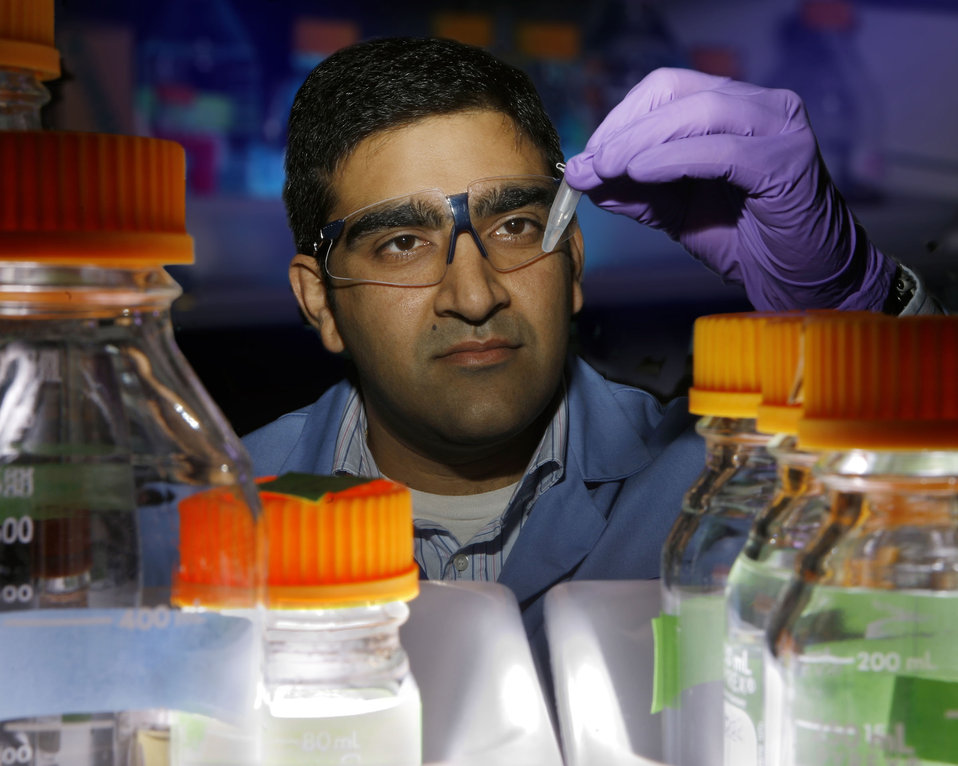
At Sandia, Rajat Sapra examines assays for the screening of engineered enzymes that show increased activity and stability at acidic conditions.

Enzymes are capable of breaking down plant material and converting it to liquid fuel efficiently. Researchers are studying ways to make biofuels from plant materials called lignocellulosic ethanol. If the enzymes can be enlisted to do much of the chemical deconstruction work, they might unlock a new transportation economy based on ethanol derived from candidate plants other than corn. Lignocellulose, one of the most abundant renewable organic materials on Earth, is a mix of complex sugars and lignin that gives strength and structure to plant cell walls. The produce fuel ethanol, lignocellulose is with the help of enzymes or acids, broken down and converted to glucose, or sugar. The glucose is then fermented to produce ethanol and carbon dioxide. The project is a component of the Joint BioEnergy Institute (JBEI), a partnership of Lawrence Berkeley, Lawrence Livermore and Sandia national laboratories and three research universities in the San Francisco Bay Area, funded by DOE's Office of Science.